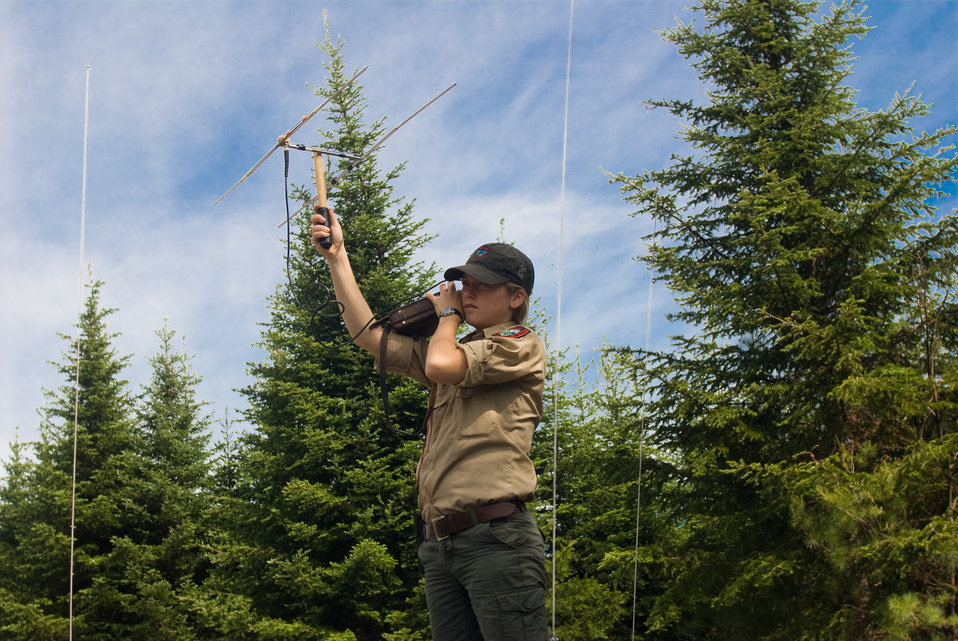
Telemetry

During Friday's den visit, a wildlife biologist locates a collared lynx from the bed of a truck.